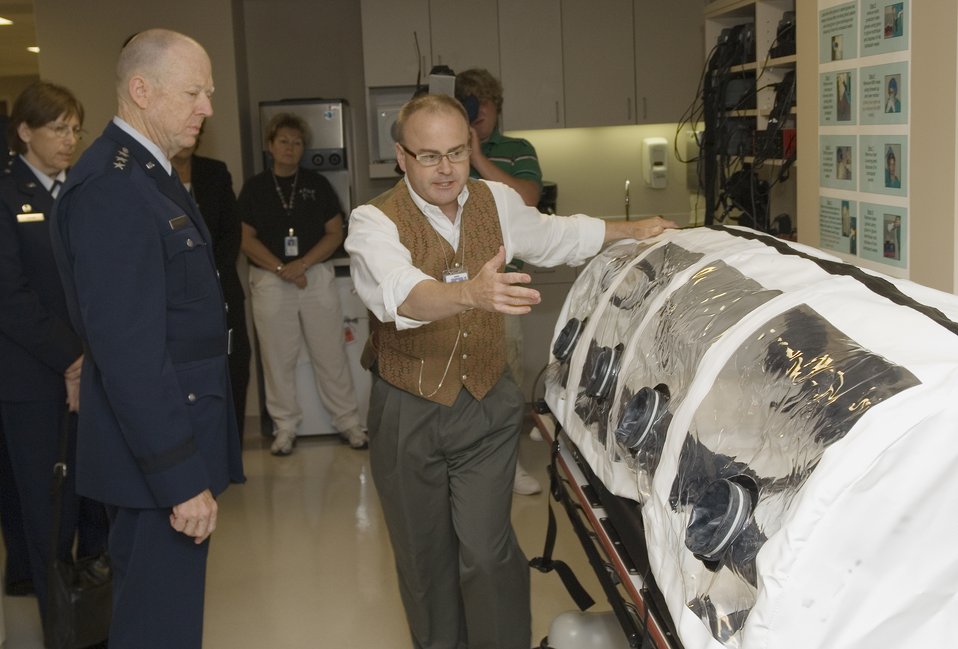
Air Force surgeon general returns to Heartland

Frank Freihaut points out various features of an isolation pod that is used to transport patients safely through and into an isolation ward to Lt. Gen. (Dr.) James G. Roudebush during a tour of The Nebraska Medical Center’s Biocontainment Unit on the University of Nebraska Medical Center campus Aug. 13 in Omaha Neb. General Roudebush is a Nebraska native and is the Air Force surgeon general. Mr. Freihaut is a respiratory therapist.